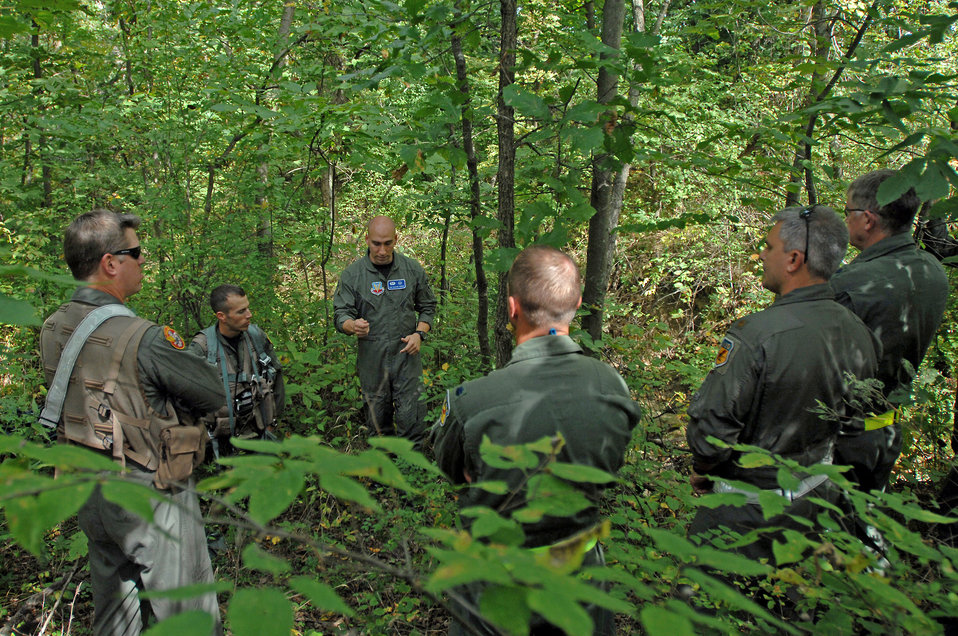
Surviving on land

Near Whiteman Air Force Base, Mo., Staff Sgt. Michael Garcia (center) trains 303rd Fighter Squadron A-10 Thunderbolt II pilots Sept. 16, 2009, on the techniques needed to survive if their aircraft were to go down behind enemy lines. Sergeant Garcia is a search and rescue specialist with the 509th Operations Support Squadron.